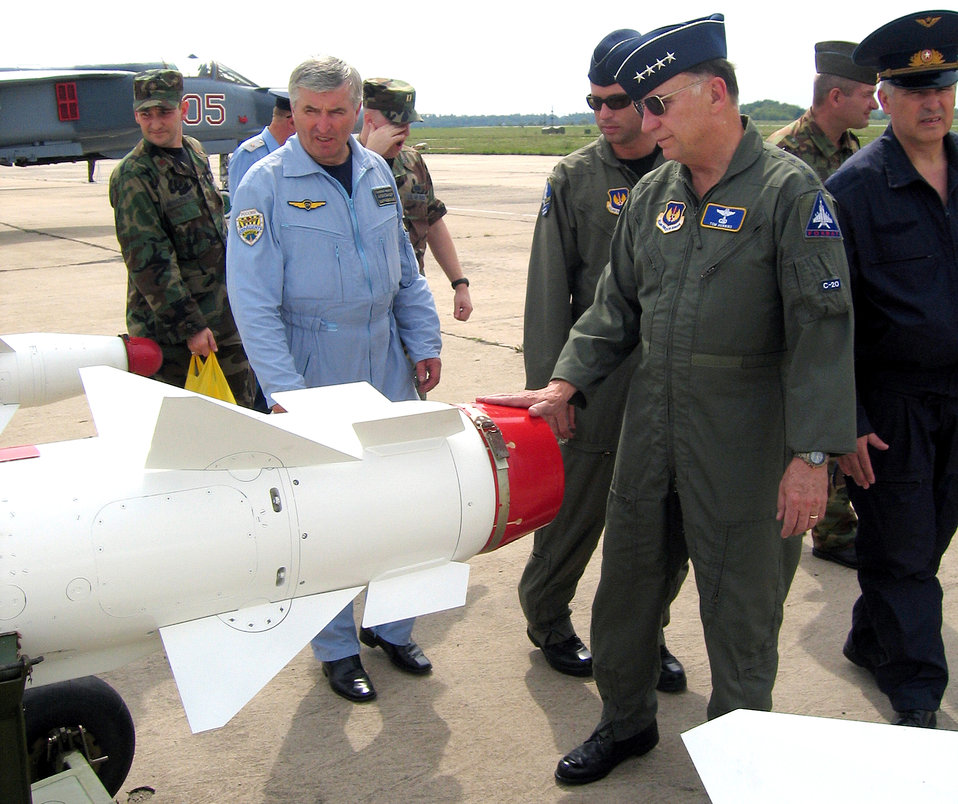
COMUSAFE concludes Russian visit

Gen. Tom Hobbins views various Russian aircraft weapons with Gen. Maj. Aleksandr Kharchevsky following his flights on the MiG-29 Fulcrum and SU-27 Flanker at Lipetsk Air Base, Russia, on Aug. 15. General Hobbins is the U.S. Air Forces in Europe commander and General Kharchevsky is the chief of the 4th Center for Combat Use and Flight Training.